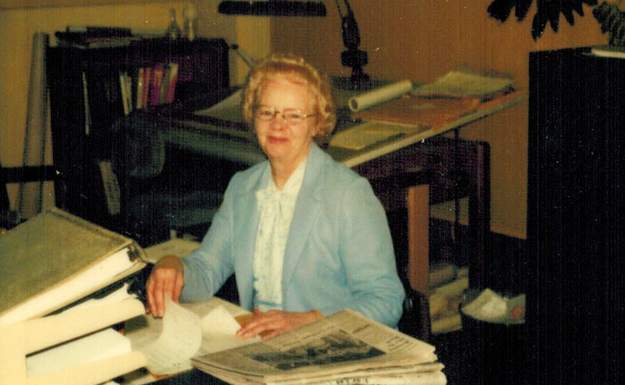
AOC Trailblazer: Georgia Shaw

Georgia Shaw was the first woman hired by the AOC as a draftsman, leading to a fulfilling 29-year career with the agency. After Georgia passed, her daughter honored her mother’s legacy by including the AOC’s logo on the memorial plaque that marks her grave.